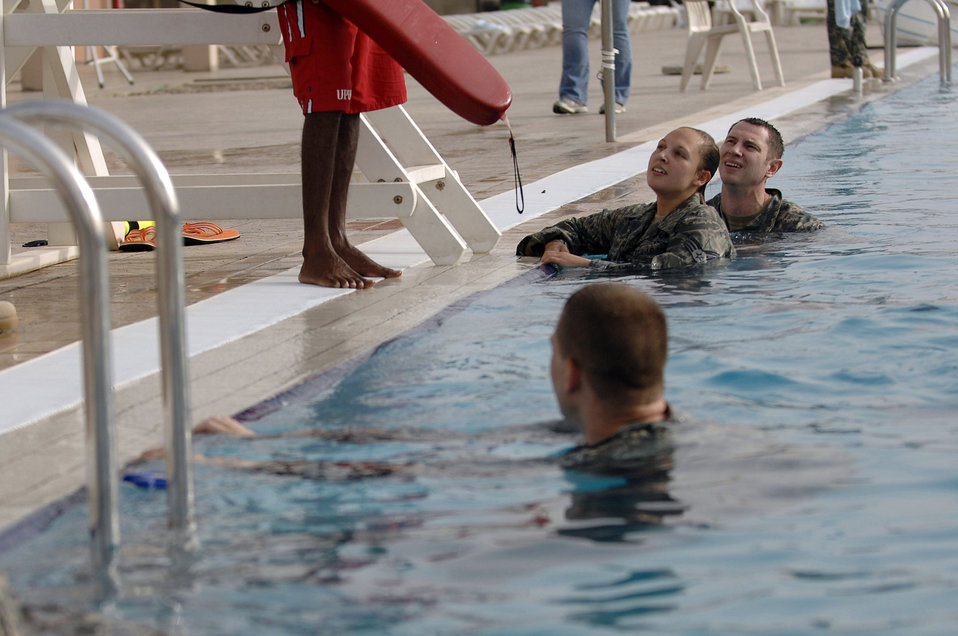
All Wet

Senior Airman Jasmine Nakayama and Master Sgt. Justin Alonzo listen to instruction before treading water for five minutes Joint Base Balad, Iraq, July 8. The training was to ensure personnel are capable of handling various water terrains. Airman Nakayama and Sergeant Alonzo are 332nd Expeditionary Civil Engineer Squadron explosive ordnance disposal technicians.